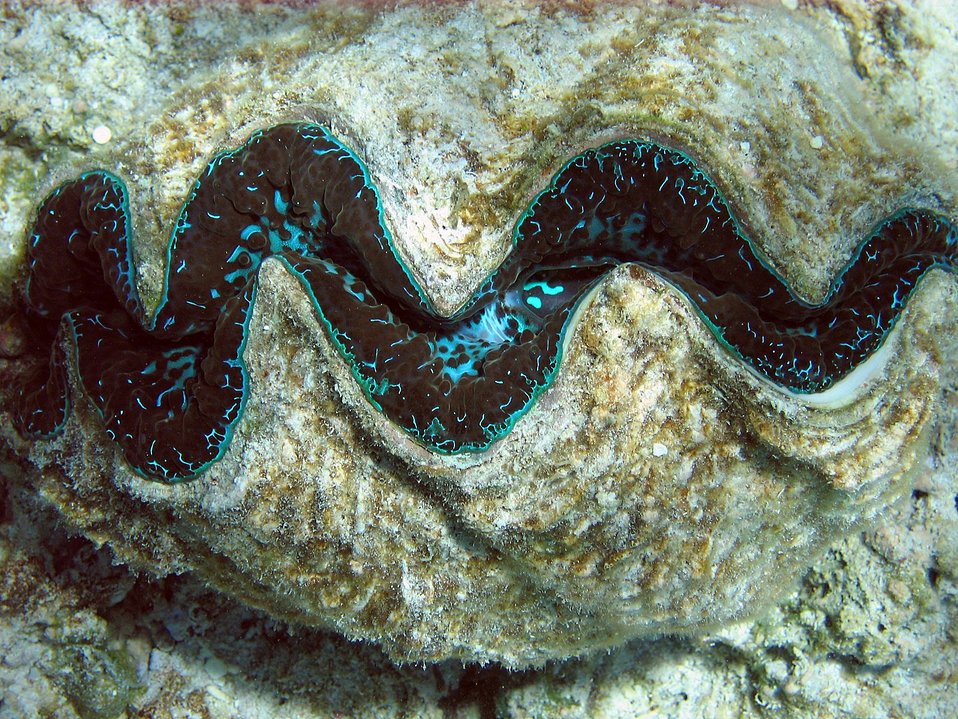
Giant clam (Tridacna sp.)